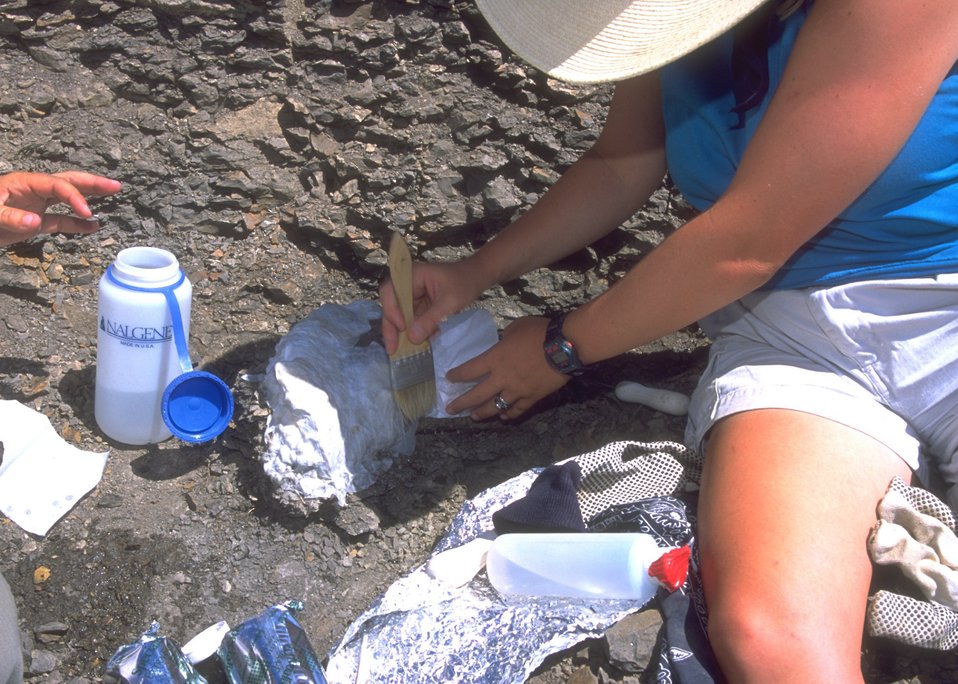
Paleontologist preparing a cast for a dinosaur bone, Lance Creek Fossil Area, Newcastle Field Office.